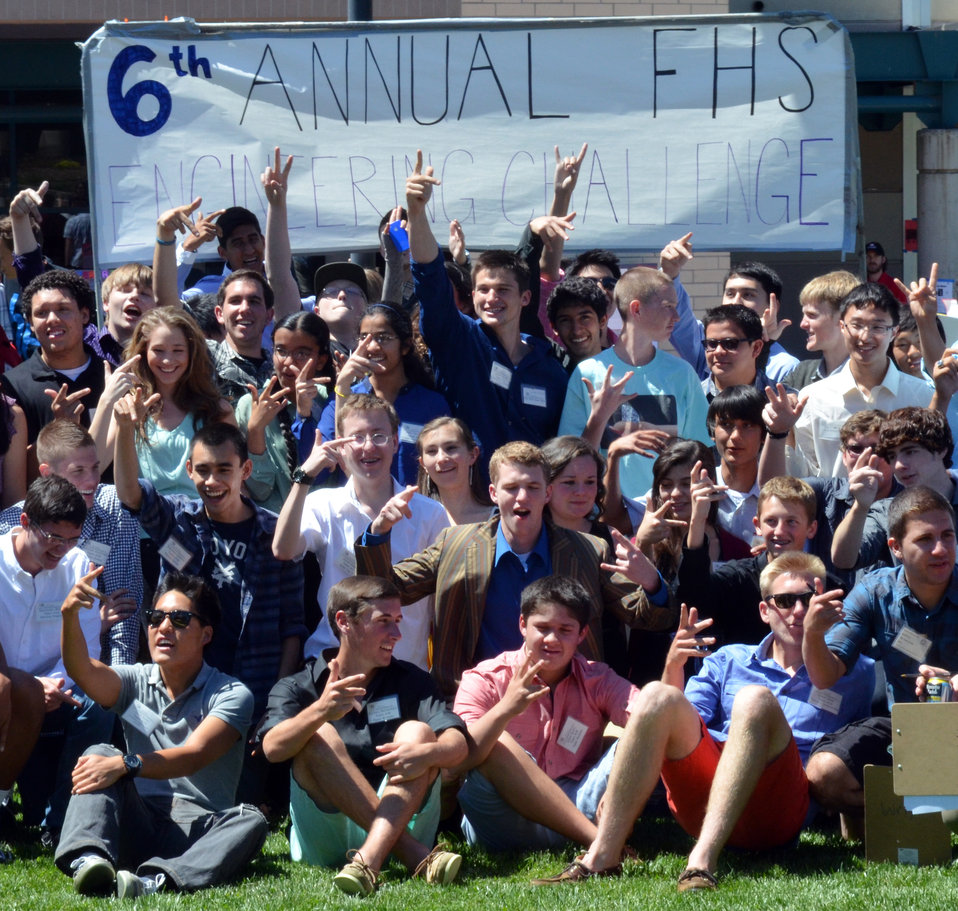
Happy future scientists salute the conclusion of the sixth annual Folsom High School Engineering Challenge in Folsom, Calif., April 19, 2013. Sixty-three student teams took part in the event that promotes careers in science, technology, engineering and math. A half dozen personnel form the U.S. Army Corps of Engineers Sacramento District participated as judges. Photo cropped for emphasis.